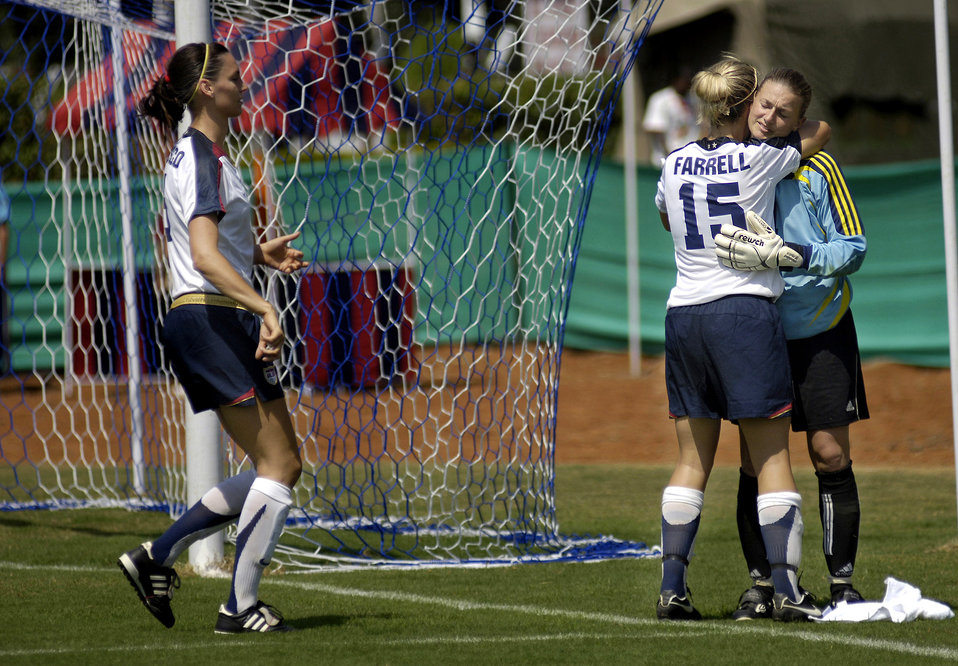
4th CISM World Military Games

U.S. Army Capt. Randee Farrell gives goal keeper Capt. Stacie Bortz a hug congratulating her on a great game against the Democratic Peoples Republic of Korea team during the Military World Games' women's soccer competition in Hyderabad, India, Oct. 14. DPR Korea defeated the U.S. team 4-0. The Conseil Internationale du Sport Militaire's Military World Games event is the largest international military Olympic-style event in the world. In this year's fourth edition of the games, 103 countries and more than 5,000 athletes are competing Oct. 14 to 21 in boxing, diving, soccer, handball, judo, military pentathlon, parachuting, sailing, shooting, swimming, volleyball and track and field. The purpose of the Military World Games is to promote